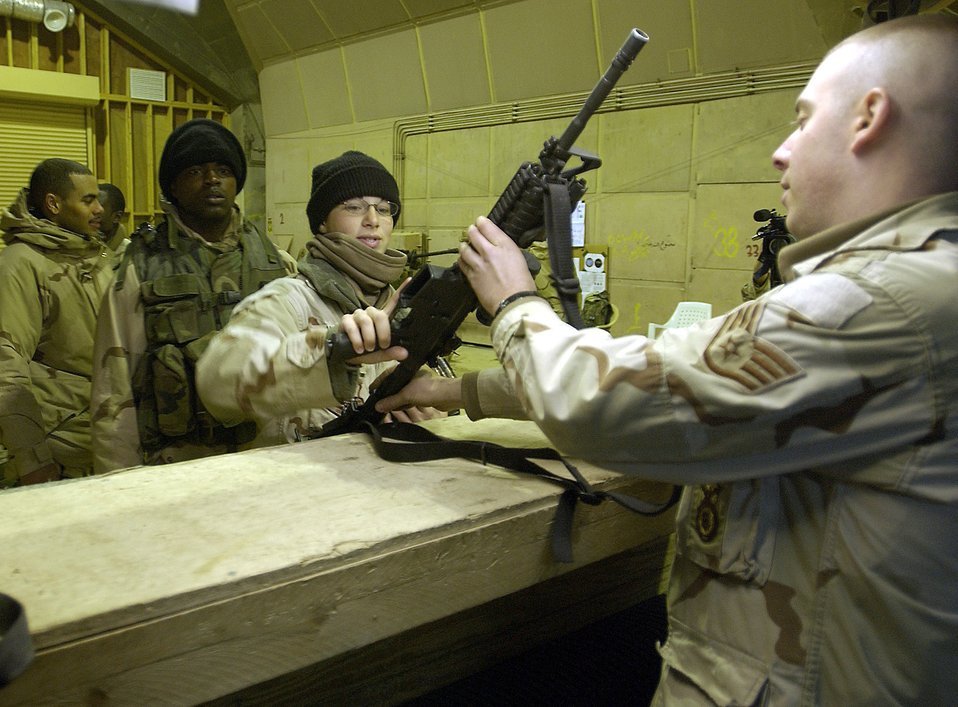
Airmen track terrorists offbase

BALAD AIR BASE, Iraq -- Airman 1st Class Rebecca Weston turns in her weapon to Staff Sgt. Sean Morris after a patrol off base. She and other Airmen of Task Force 1041 defend the installation by conducting patrols, searches and other missions.